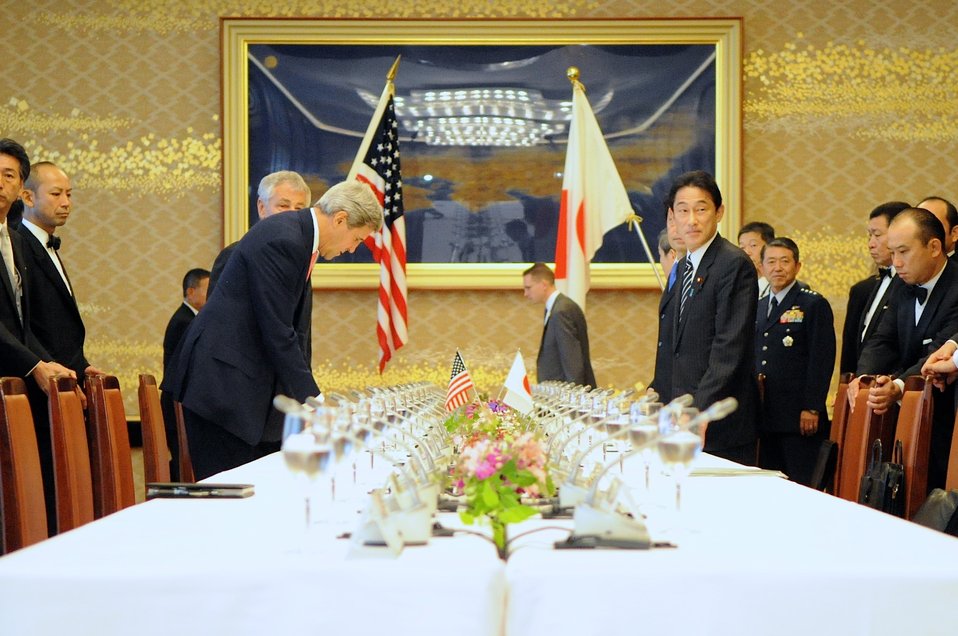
Secretary of State Kerry and Defesnse Secretary Hagel Arrive for the U.S.-Japan Security Consultative Meeting (2 2) in Tokyo

U.S. Secretary of State John Kerry and U.S. Secretary of Defense Chuck Hagel prepare to begin a meeting with Japanese Foreign Minister Fumio Kishida and Japanese Defense Minister Itsunori Onodera in Tokyo on October 3, 2013.